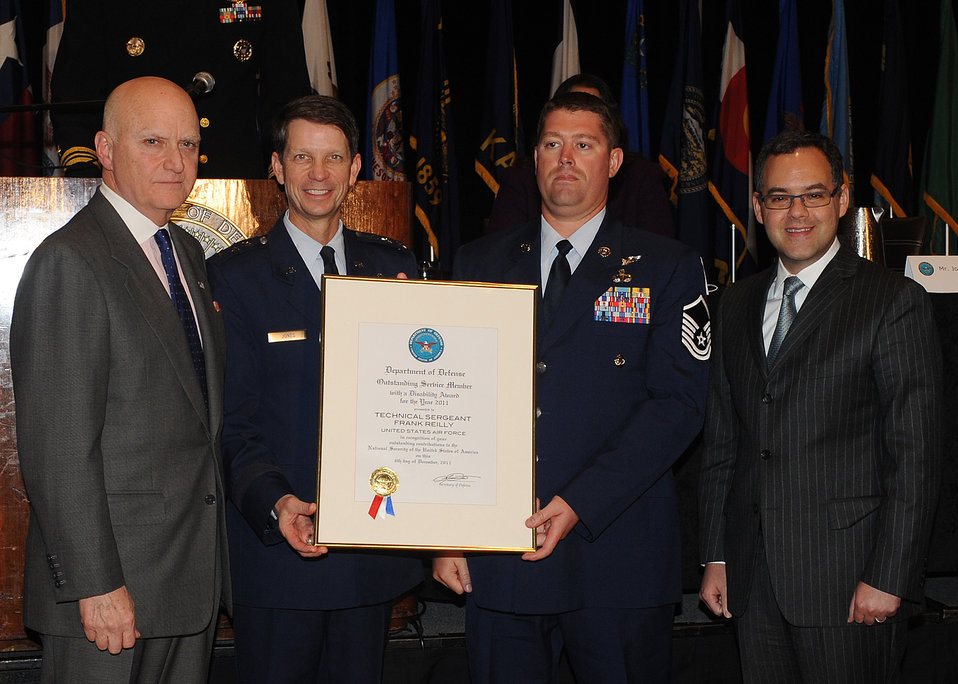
Three Air Force members honored at DOD disability awards ceremony

Master Sgt. Frank Reilly receives his Department of Defense Outstanding Service Member with a Disability award Dec. 6, 2011, from John R. Campbell, Lt. Gen. Darrell Jones and Daniel Ginsberg during the 31st Annual DOD Disability Awards ceremony at the Hyatt Regency Hotel in Bethesda, Md. The award highlights the valuable contributions to national security made by individuals with disabilities. Reilly special operations recruiter liaison, Campell is the Deputy Assistant Secretary of Defense for Wounded Warrior Care and Transition Policy, Jones is the Air Force deputy chief of staff for manpower, personnel and services and Ginsberg is the Air Force assistant secretary for manpower and reserve affairs.